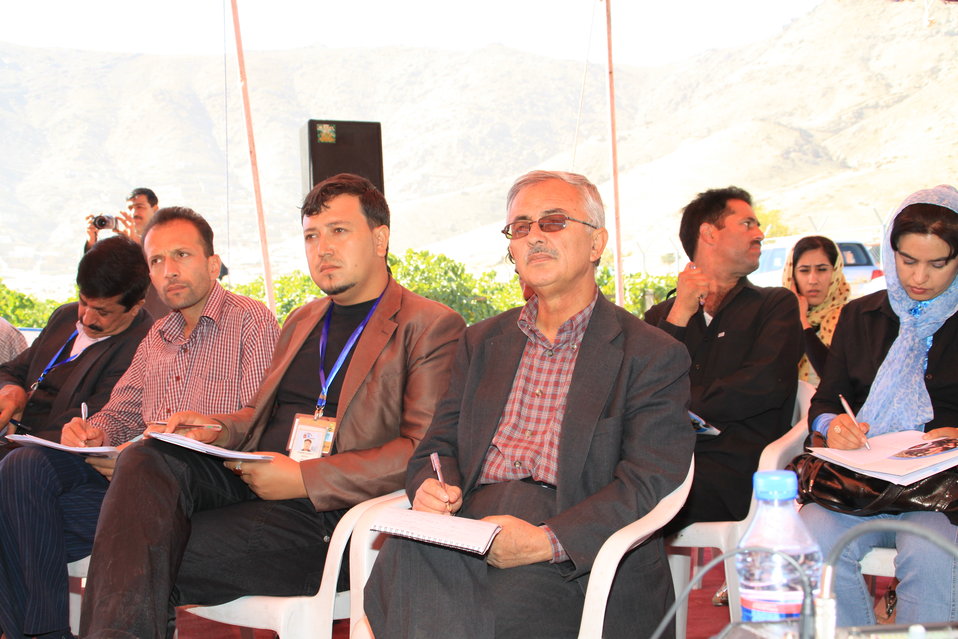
AVIPA Plus Wheat Seed Distribution 101005

US Ambassador Karl Eikenberry and USAID Acting Mission Director Kevin Brownawell joined the Minister of Agriculture, Irrigation and Livestock, H.E. Minister Mohammed Rahimi in signing a Memorandum of Understanding and distributing vouchers to area farmers for wheat and fertilizer.

US Ambassador Karl Eikenberry and USAID Acting Mission Director Kevin Brownawell joined the Minister of Agriculture, Irrigation and Livestock, H.E. Minister Mohammed Rahimi in signing a Memorandum of Understanding and distributing vouchers to area farmers for wheat and fertilizer.